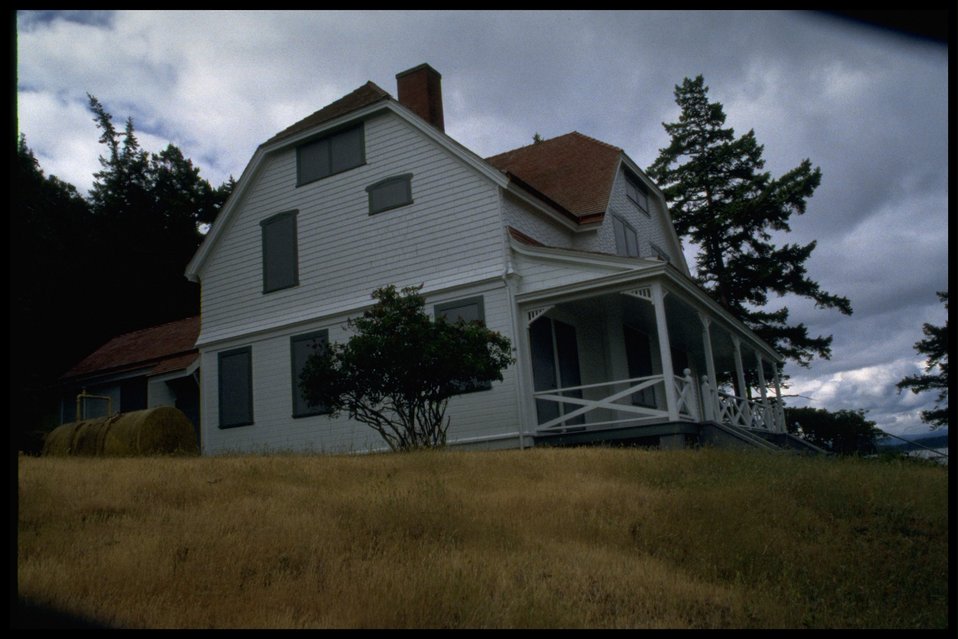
The living quarters at Turn Point.